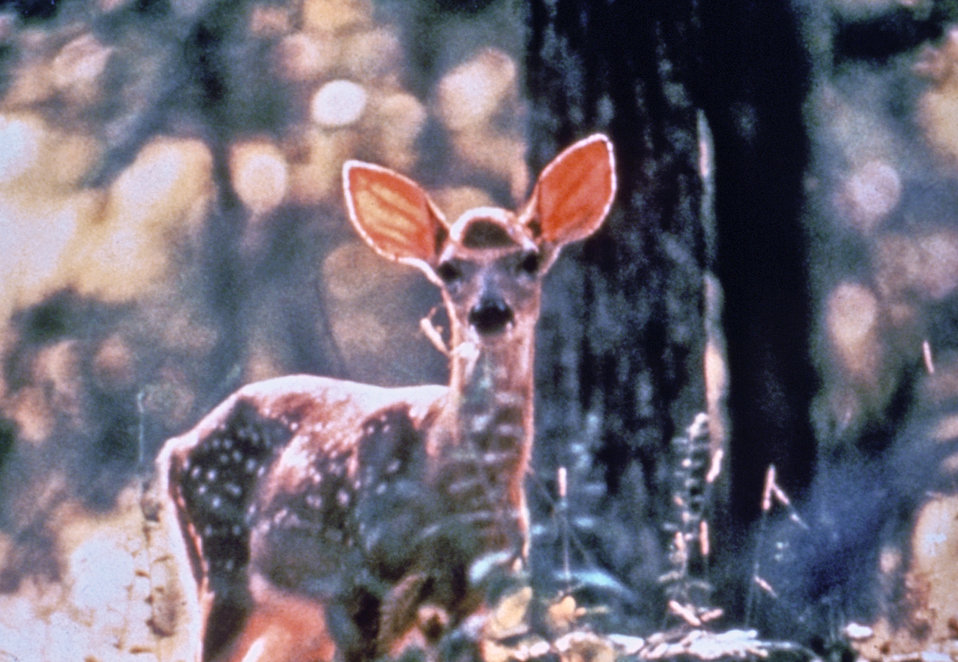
This photograph of a whitetail deer, Odocoileus virginianus, was taken during a Lyme disease field investigation in 1993.